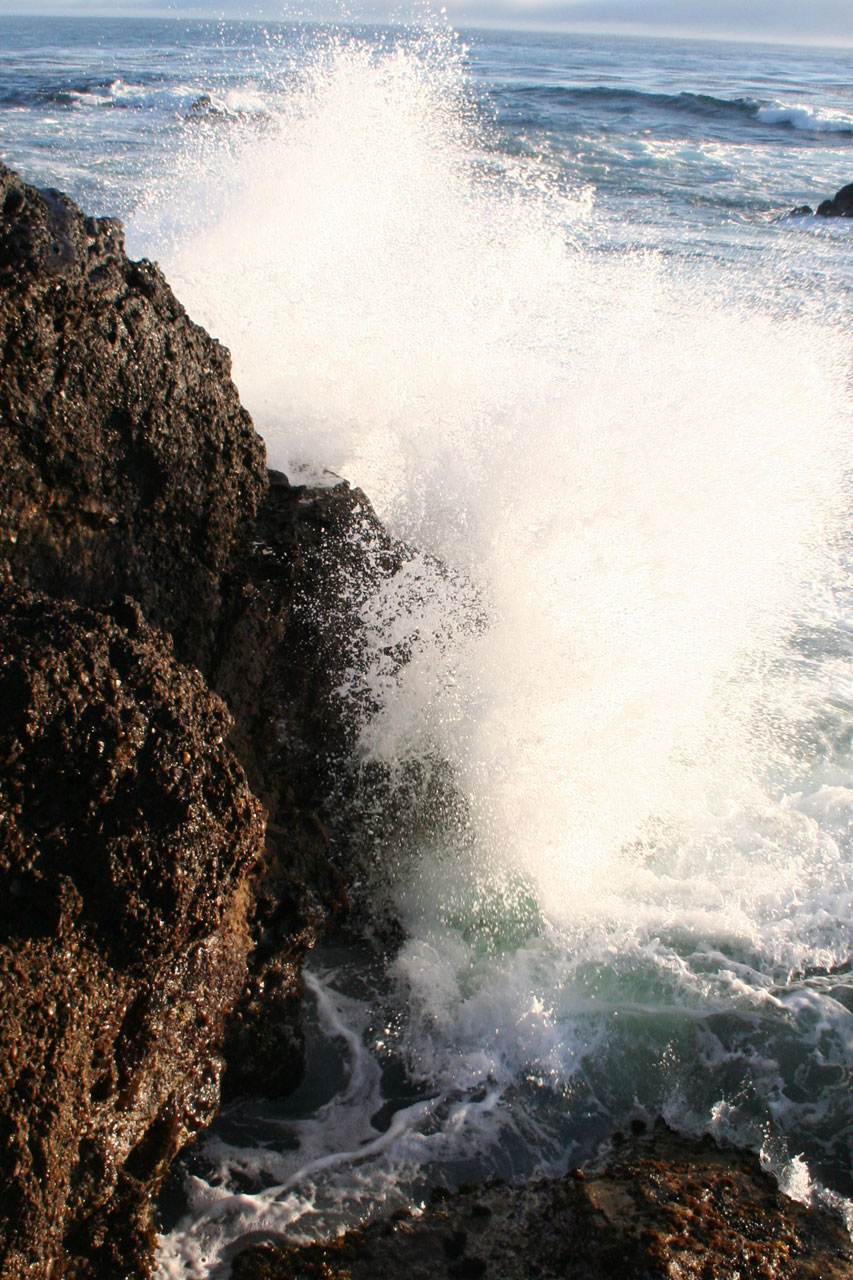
Carmel splash coast

Crest of wave splash against rocks.